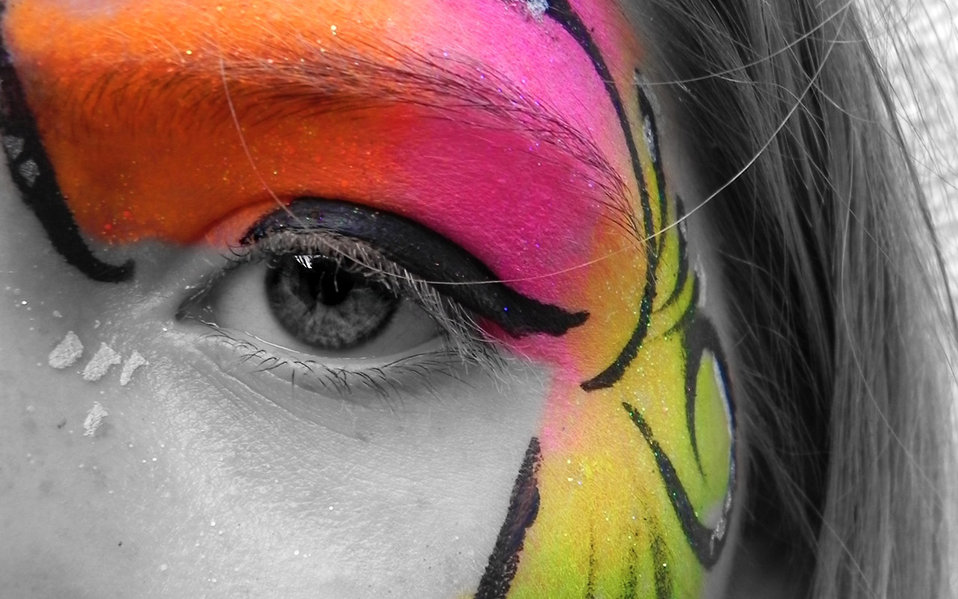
Face paint on a face.